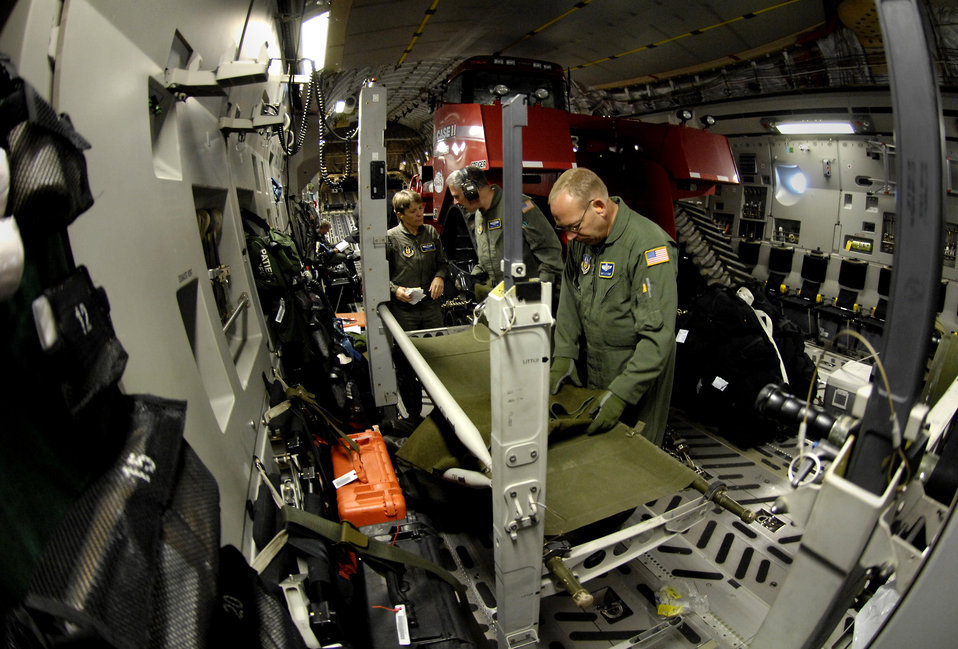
McChord C-17 crew flies medevac mission out of Antarctica

A medical team sets up their equipment on a C-17 Globemaster III before taking off on a medical evacuation mission to Antarctica Aug. 28 from Christchurch, New Zealand. The Airmen are from the 446th Aeromedical Evacuation Squadron, McChord Air Force Base, Wash. The medical evacuation mission was flown for a patient who required more definitive medical treatment than can be handled in Antarctica.